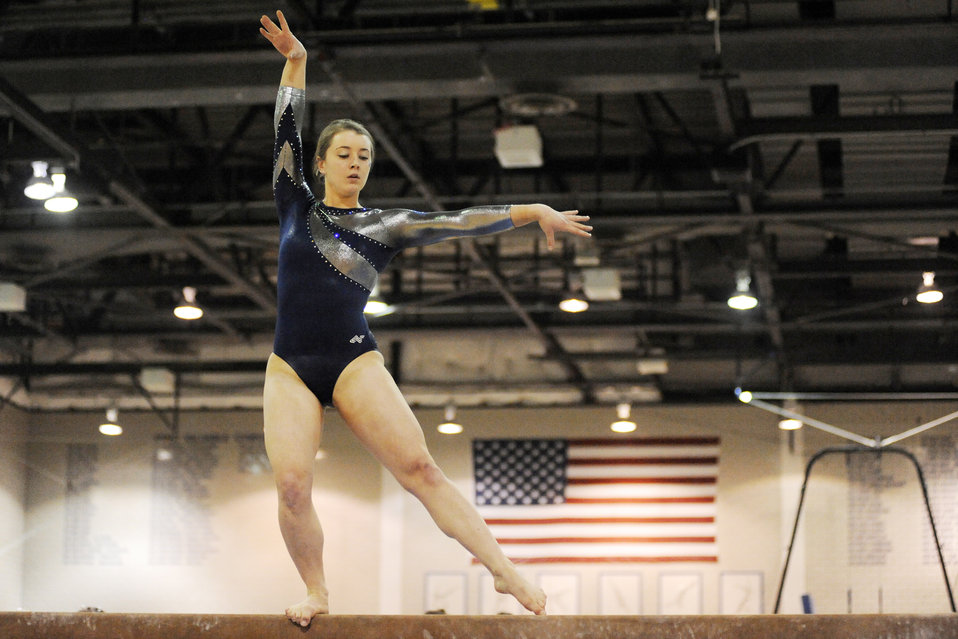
Women gymnasts compete in tri-meet

Falcon freshman Erin Brown competes on the balance beam during the home tri-meet against Southeast Missouri State and Seattle-Pacific in the U.S. Air Force Academy's Cadet Gym Feb. 20, 2010. Air Force placed second in the team competition.